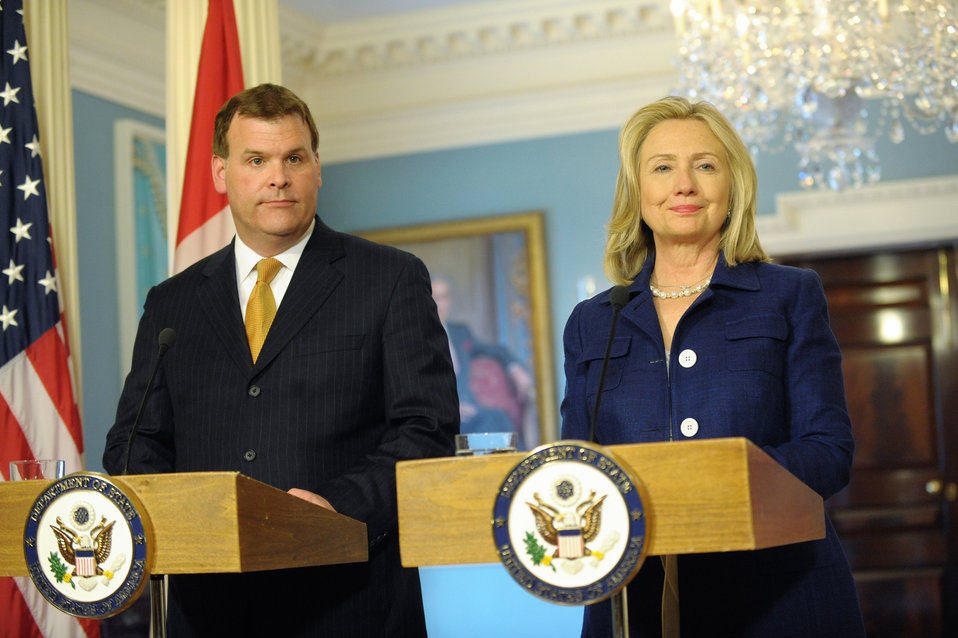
Secretary Clinton Meets With Canadian Foreign Affairs Minister Baird

U.S. Secretary of State Hillary Rodham Clinton meets with Canadian Foreign Affairs Minister John Baird, at the U.S. Department of State in Washington, D.C., on August 4, 2011.